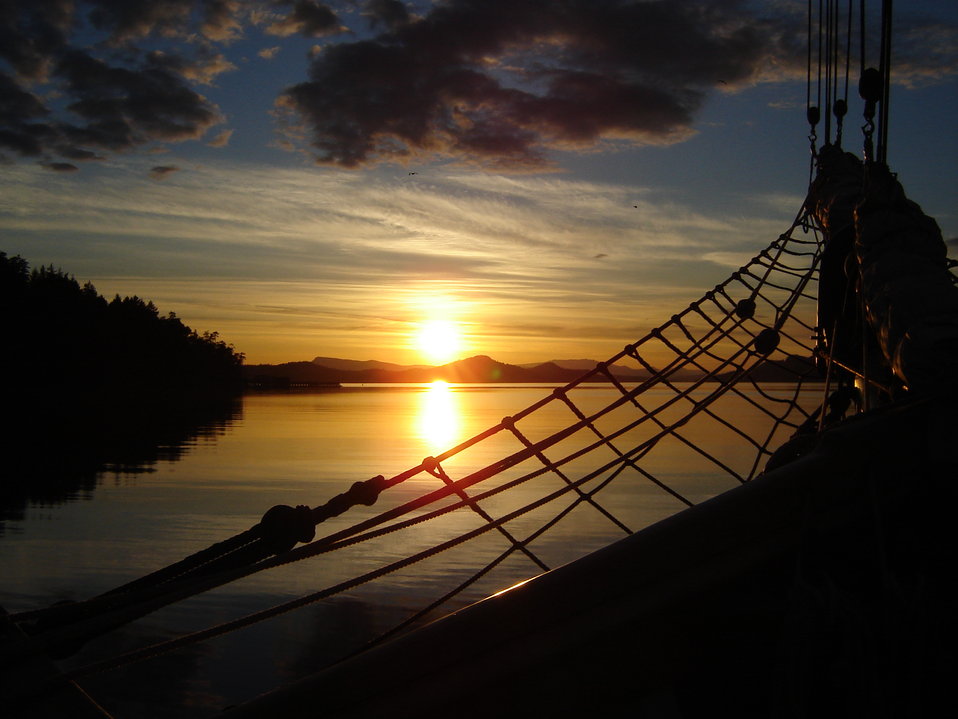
Photo taken by Graham Kinglsey